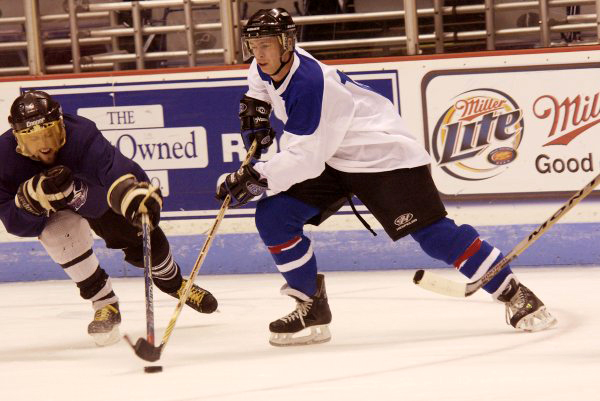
Hockey time

CHARLESTON, S.C. -- Russ Killpartrick skates into the Navy's zone and scores the first goal of the game for the Air Force hockey team from nearby Charleston Air Force Base. The Airmen defeated the Navy team 6-5.